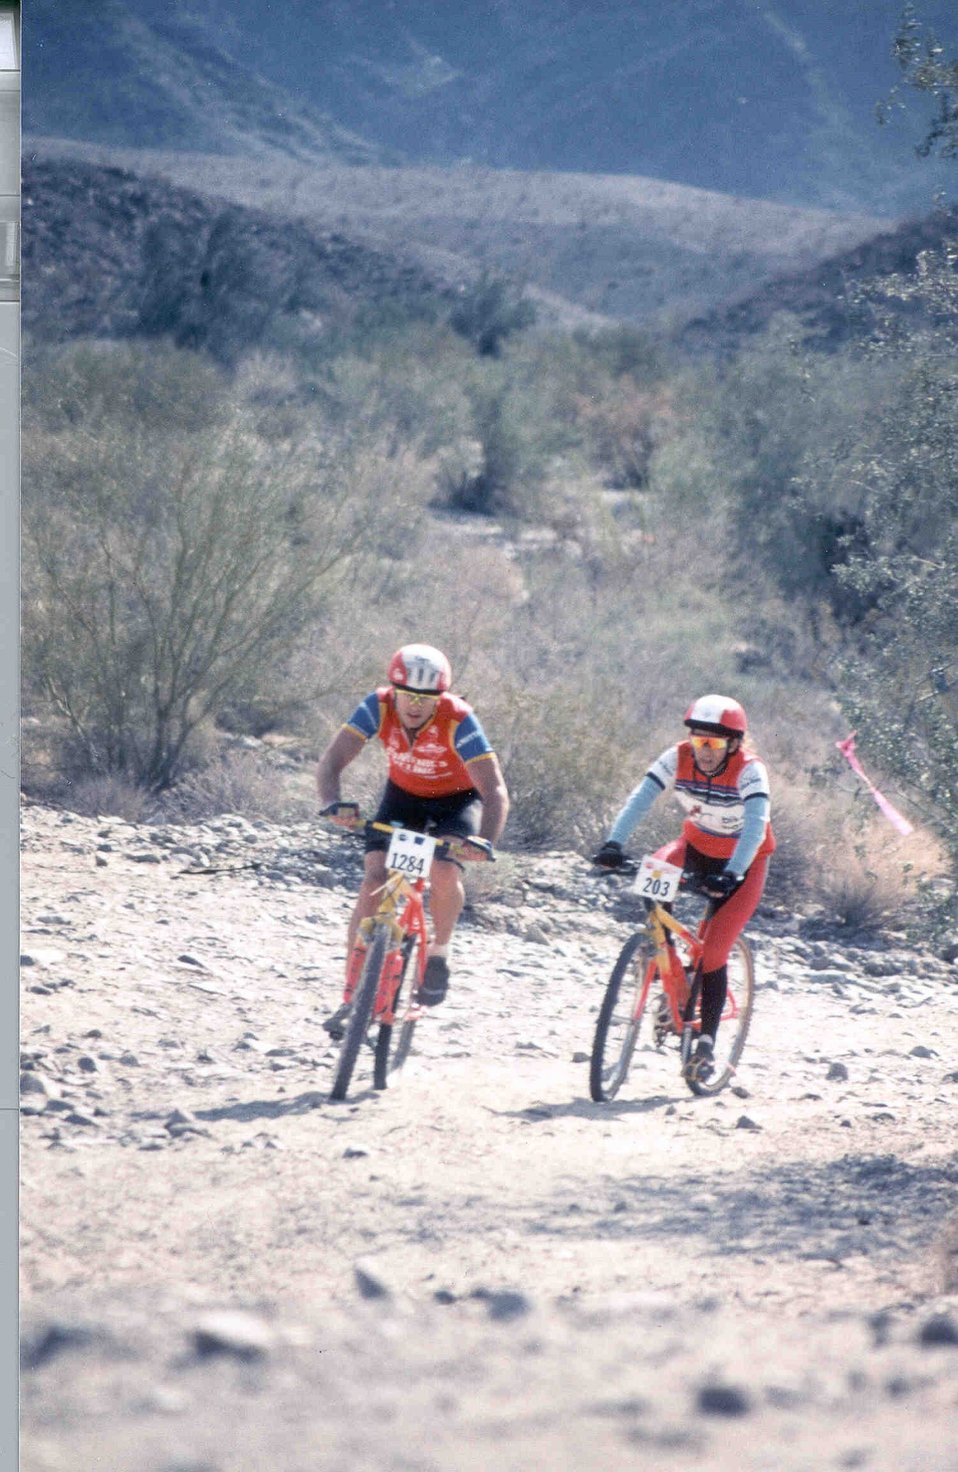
Mountain bikers racing in the desert